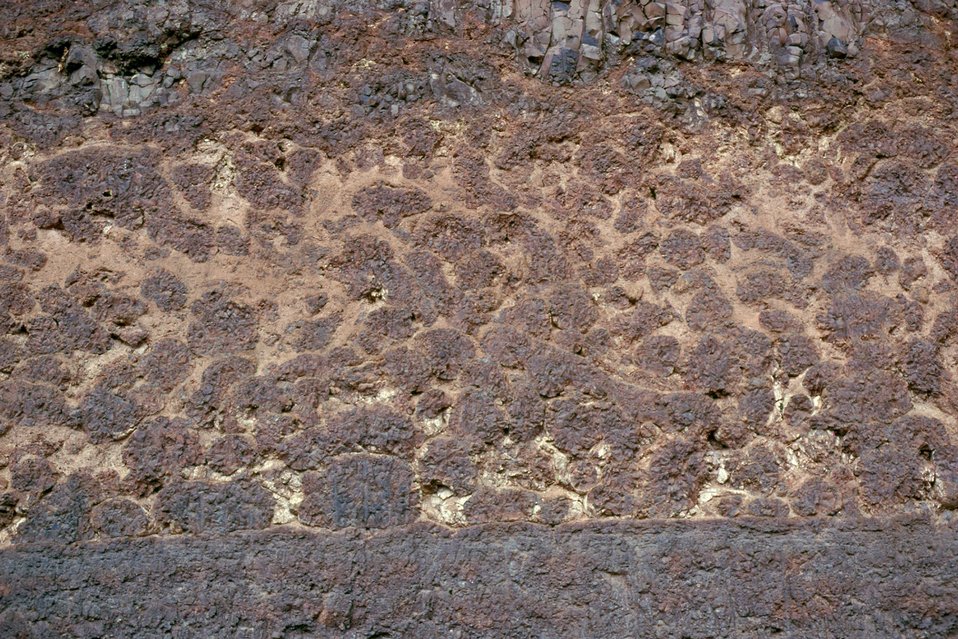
Grangeville Pillow Basalt Cottonwood Field Office UCSC Upper Columbia Salmon Clearwater District